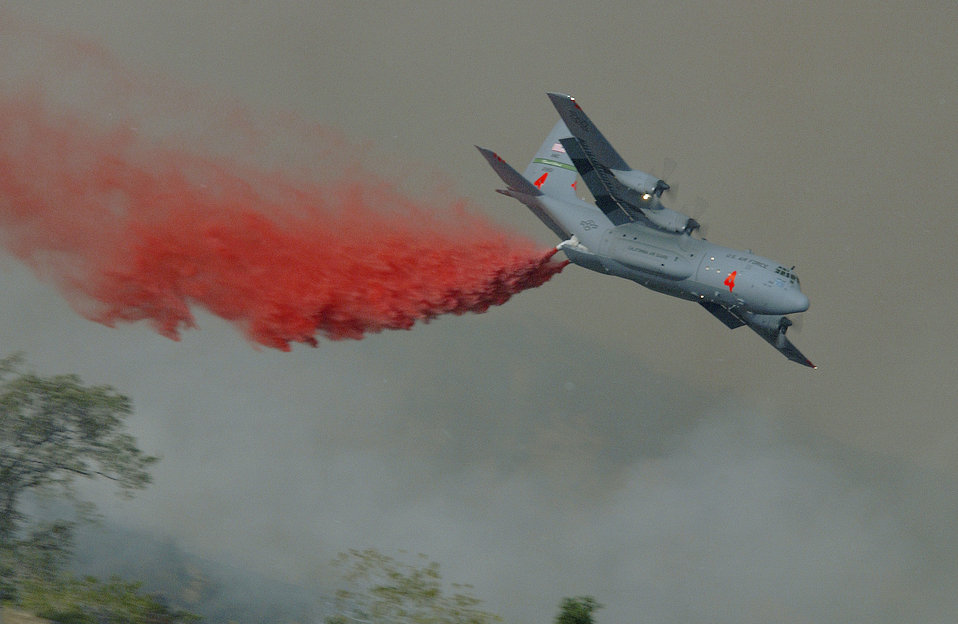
Fighting the fire

CHANNEL ISLANDS AIR NATIONAL GUARD STATION, Calif. -- An Air Force C-130 Hercules aircraft drops fire retardant on the Simi Fire in Southern California on Oct. 28. The modular airborne firefighting system-equipped aircraft is assigned to the 146th Airlift Wing here.